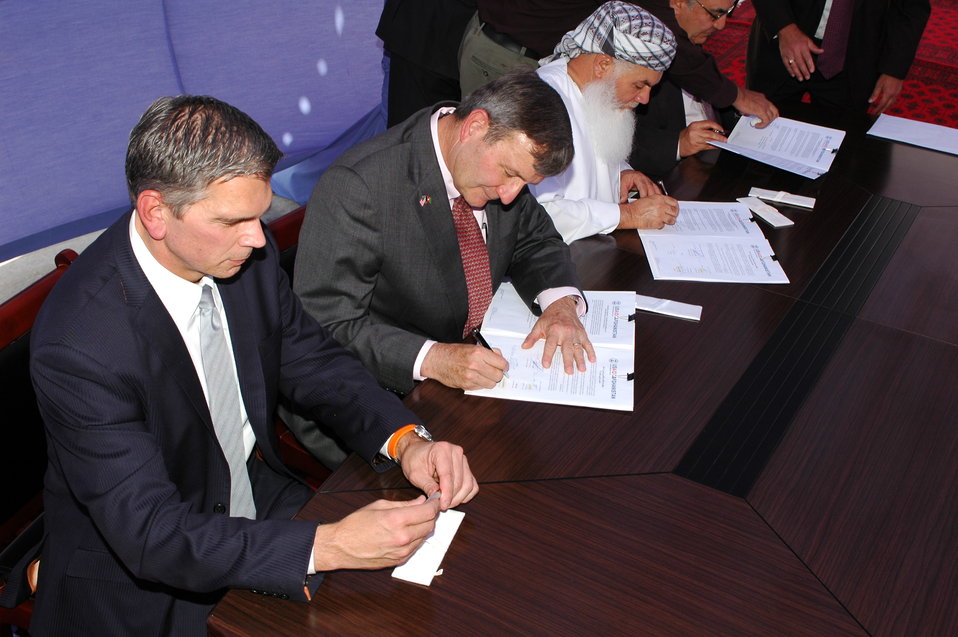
105 MW Tarakhil Power Plant Handover